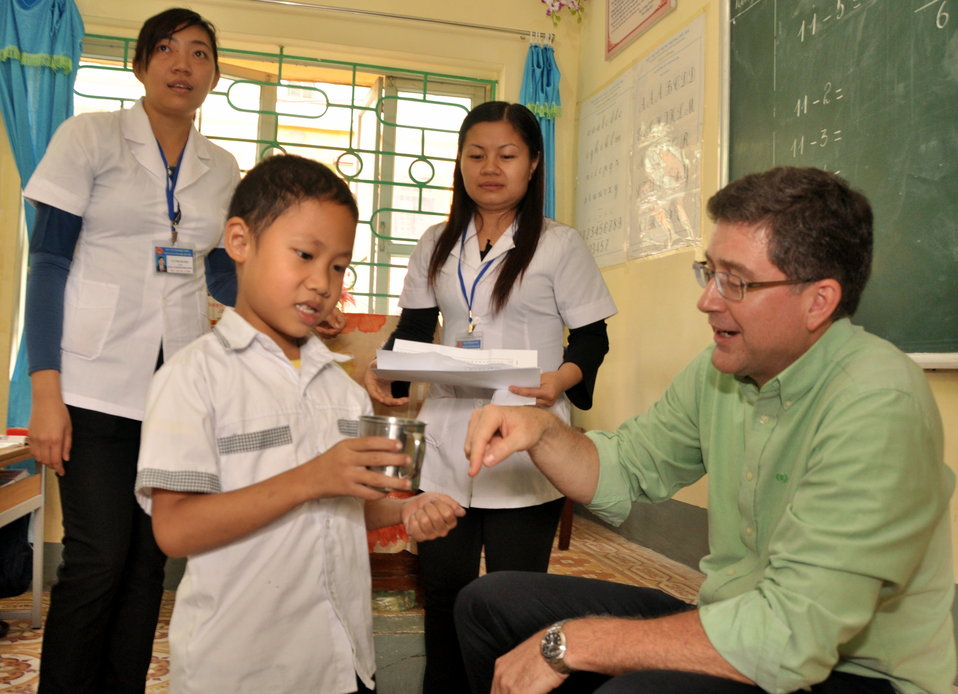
Jonathan Ross, Director of USAID/Vietnam's Office of Health, Joins the deworming medicine distribution in Dien Bien

October 31, 2012